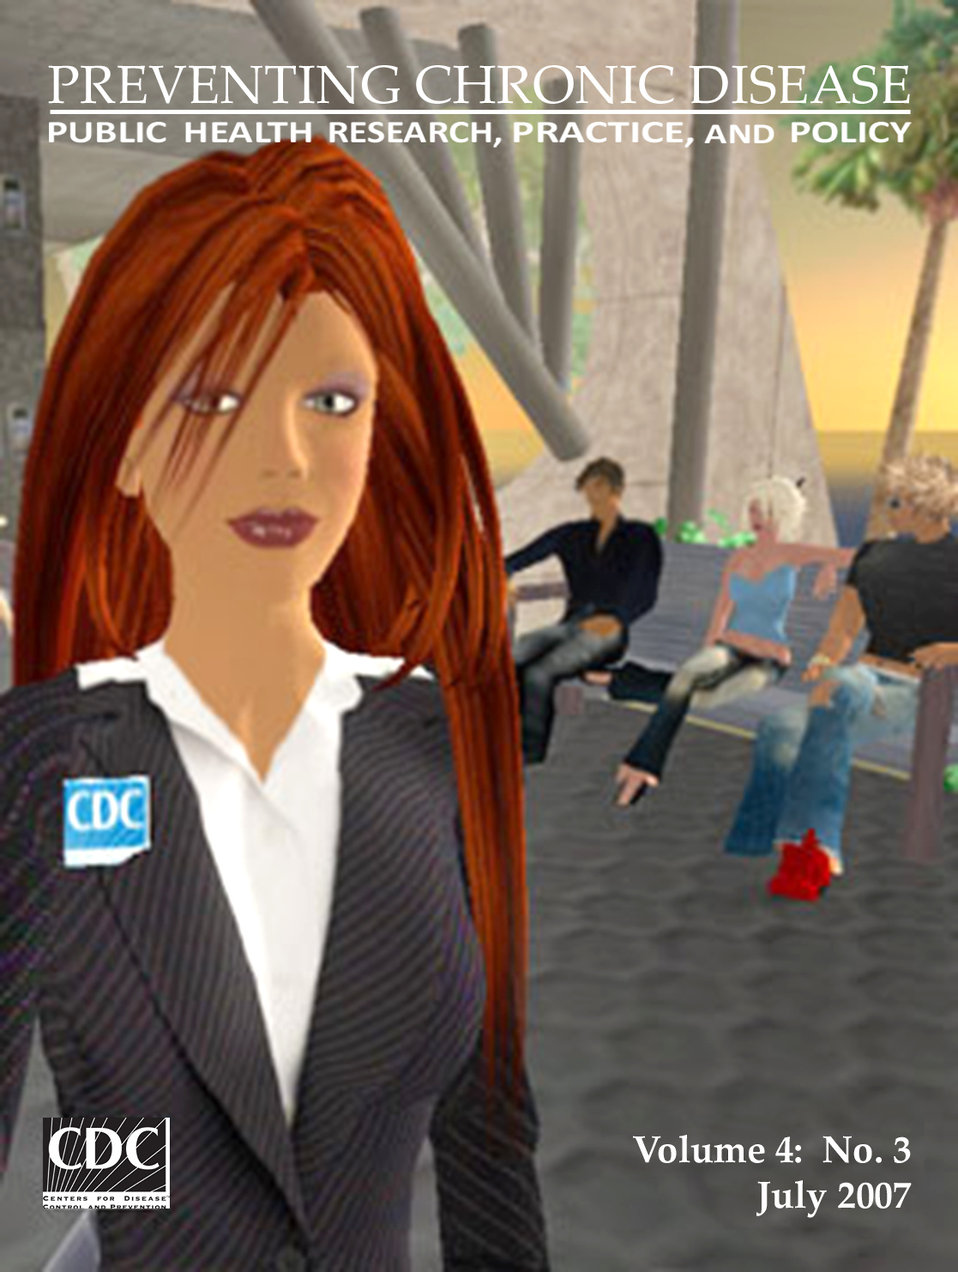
This computer-generated image depicts Hygeia Philo, the CDC's lead avatar in the virtual world of Second Life. Dr. John Anderton designed Hygeia Philo, whose name is based on the Greek meaning 'lover of health', to be the modern muse of health, serving as lead health spokesperson and health educator in this new virtual space. Hygeia was featured as the cover art for the CDC's journal, Preventing Chronic Disease, July, 2007, as emblematic of new media, and new issues confronting traditional public health practice. See PHIL 10002, 10005, 10007, 10008, 10009, 10011, 10012, 10013, 10014, and 10016 for additional images of Ms. Philo.